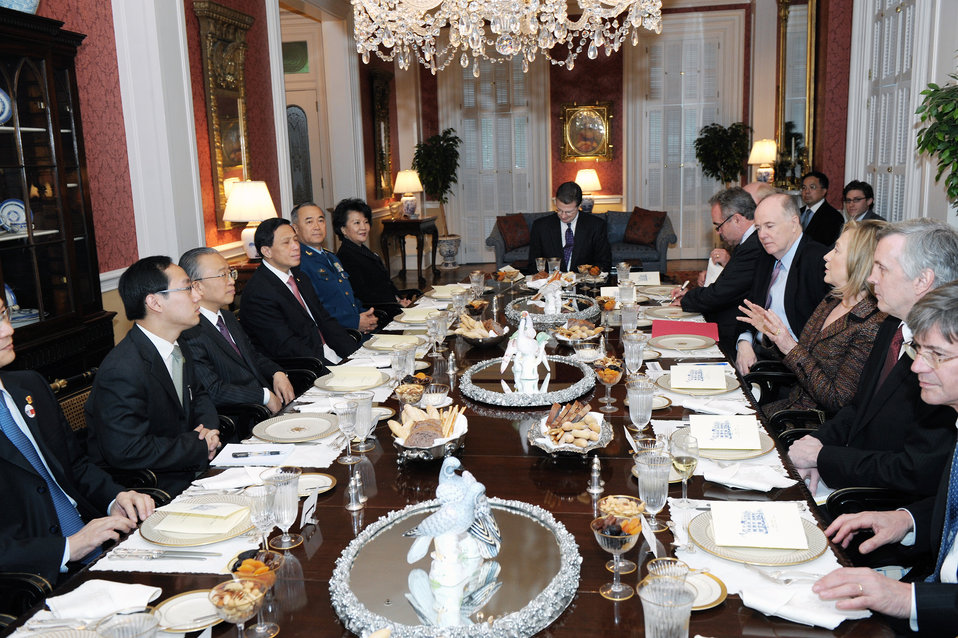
Secretaries Clinton, Geithner Co-Host a Reception in Honor of Chinese Vice Premier Wang, State Councilor Dai Bingguo

U.S. Secretary of State Hillary Rodham Clinton and U.S. Treasury Secretary Timothy Geithner co-host a reception in honor of Chinese Vice Premier Wang Chinese and State Councilor Dai Bingguo with senior members of the U.S. and Chinese delegations, at the Blair House in Washington, D.C., on May 8, 2011.